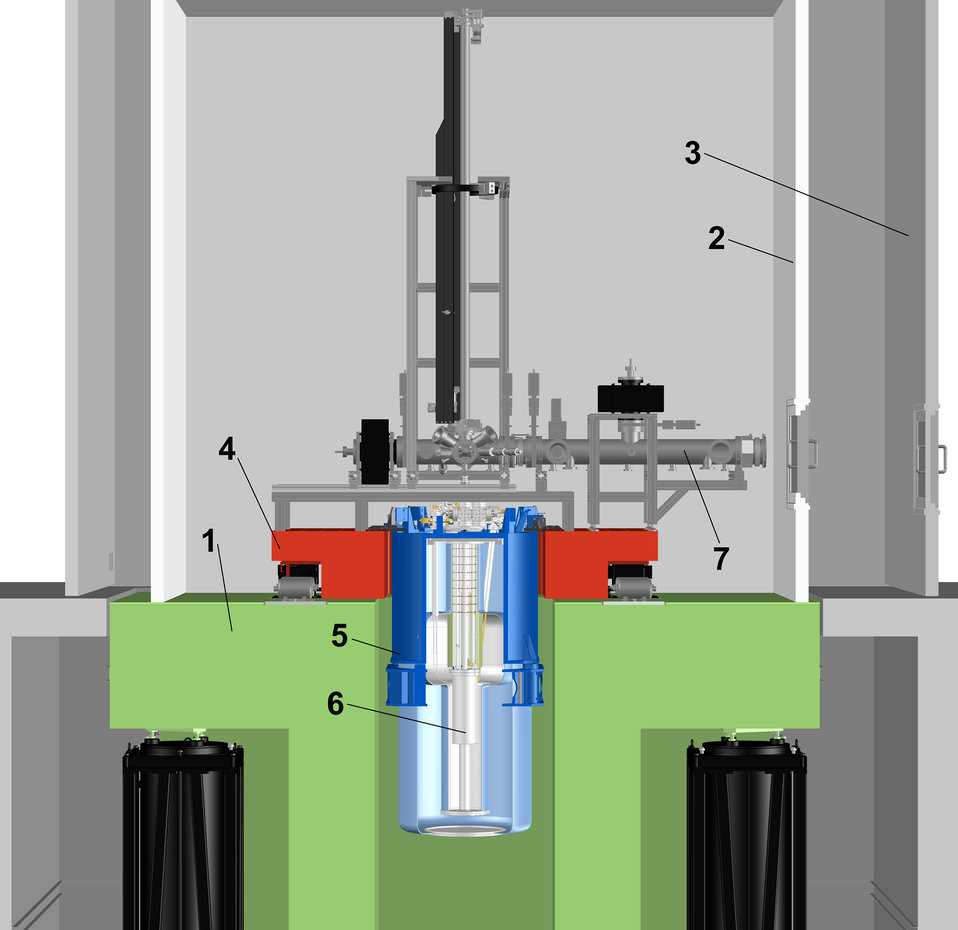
Scanning Probe Microscope

The ULTSPM lab rests on a separate 110-ton concrete slab (1), supported by pneumatic isolators. Inner (2) and an outer (3) enclosures shield from acoustic noise, with the inner enclosure also acting as a radio-frequency shield. The microscope is mounted on a 6-ton granite table (4), also supported by pneumatic isolators. The cryostat (5) is mounted in a hole in the granite table and in the concrete slab on a third set of pneumatic isolators. Inside the cryostat, the dilution refrigerator insert (6) hangs immersed in the liquid helium bath. Samples from the processing lab enter the enclosed room through two hatches on the right via a central vacuum line (7).